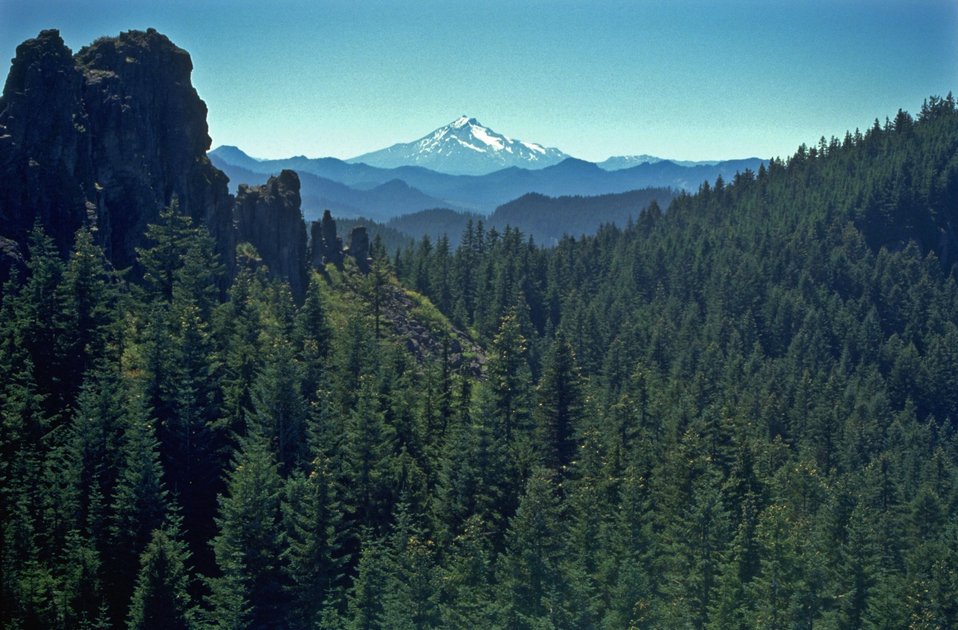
Mount Jefferson from Roaster Rock in the Table Rock Wilderness Area.